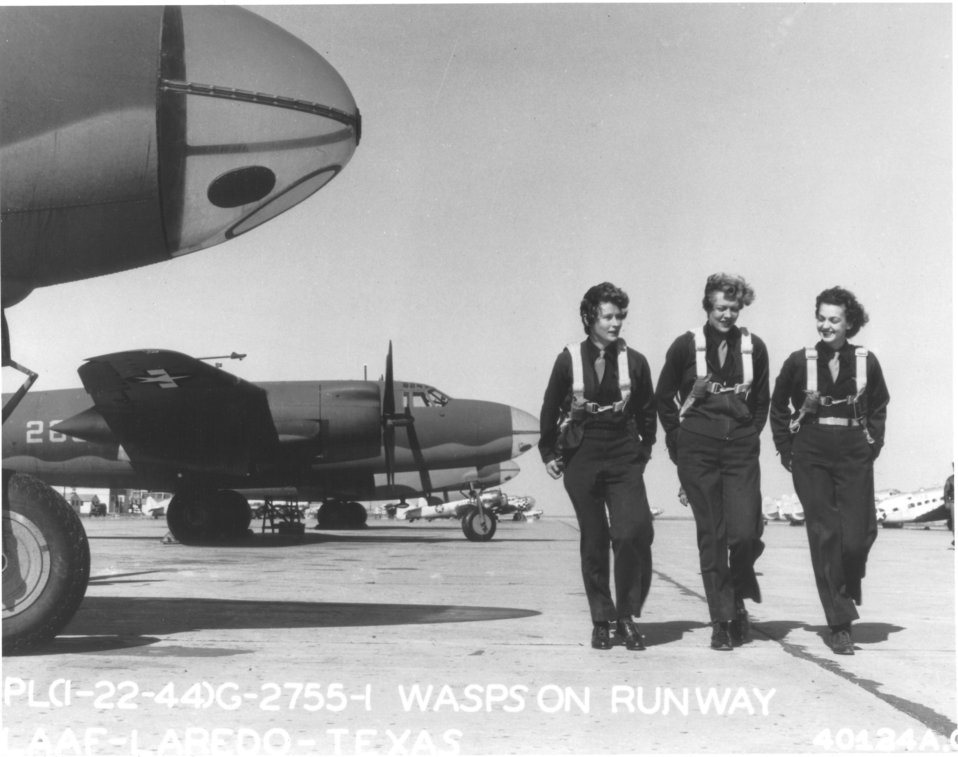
WASPs on flight line

1940's -- WASPs on flight line at Laredo AAF, Texas, 22 January 1944.